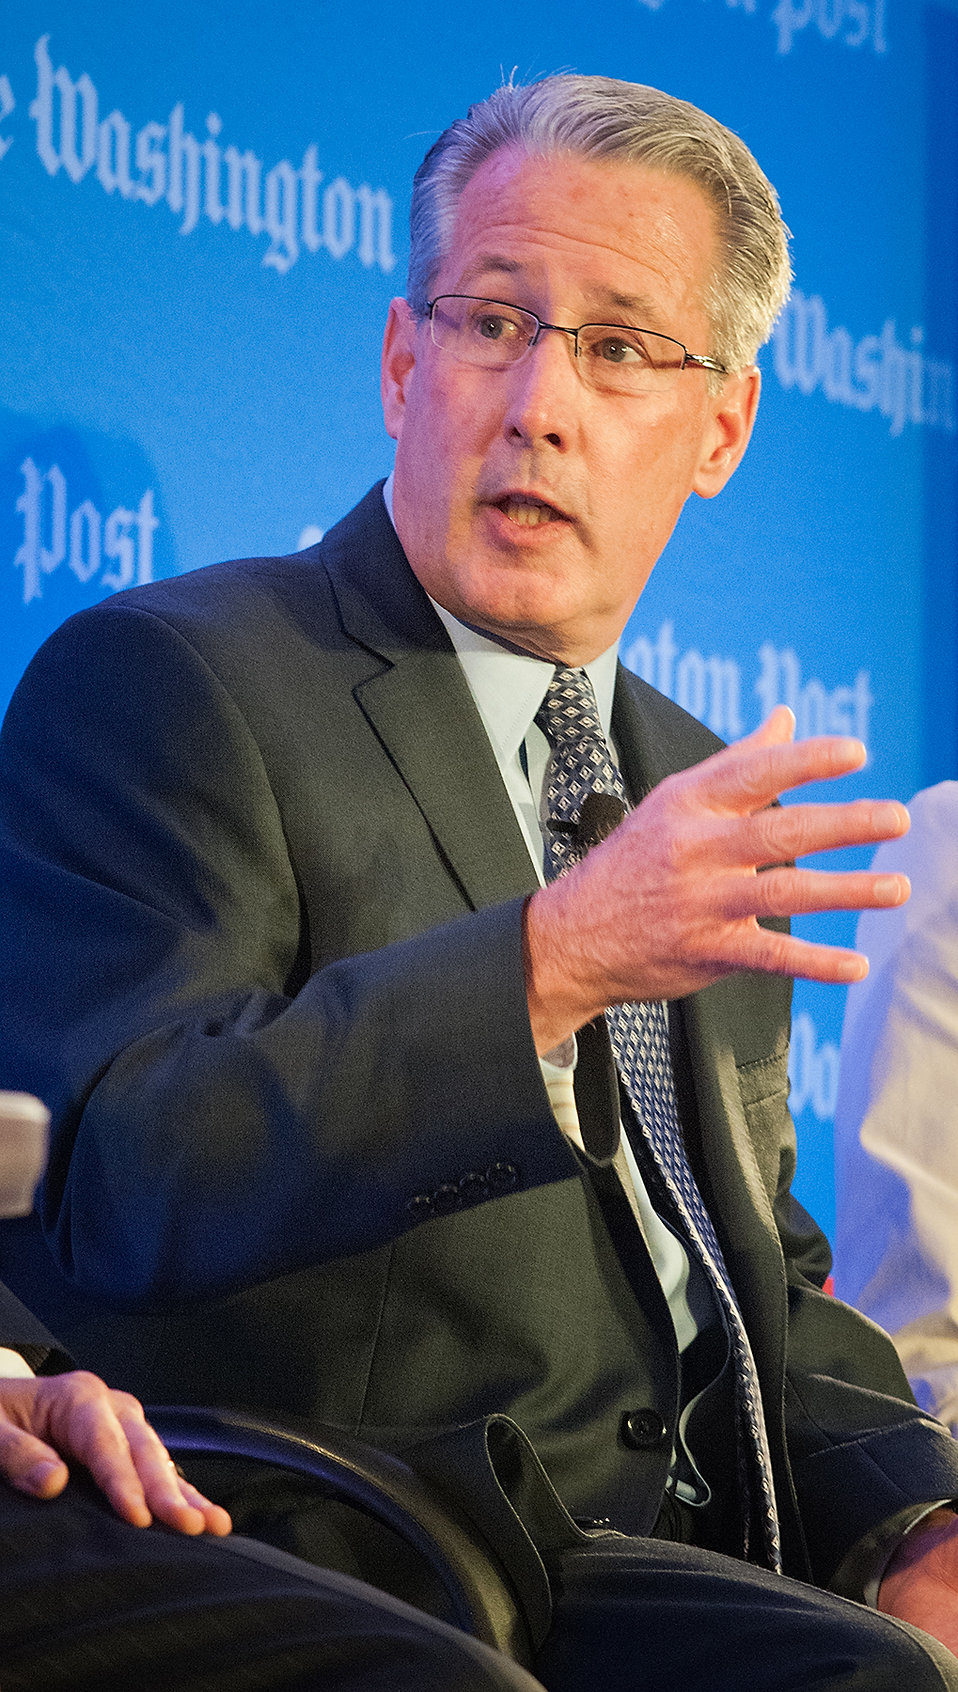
Dairy Farmers of America President and Chief Executive Officer (CEO) Rick Smith discusses From the Farm: Innovations and the Latest Advances in Food Production, during the annual live forum, “Future of Food: Building a Sustainable Food System 2013,” sponsored by the Washington Post Live in Washington, D.C. on Wednesday, May 22, 2013. Agriculture Secretary Tom Vilsack, leading agricultural, government and nutrition experts discussed expanding healthy, sustainable food systems including public-private partnerships, the market’s role in nutrition and the future of agricultural innovation.